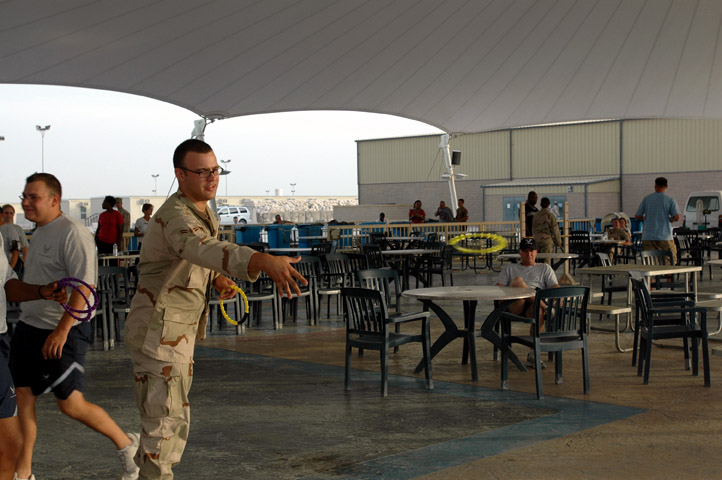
Expeditionary Wing celebrates Independence Day in Middle East

Airman 1st Class Jason Markley throws rings at a 4th of July celebration at a deployed location in Southwest Asia. Airman Markley is assigned to the 379th Expeditionary Contracting Squadron.